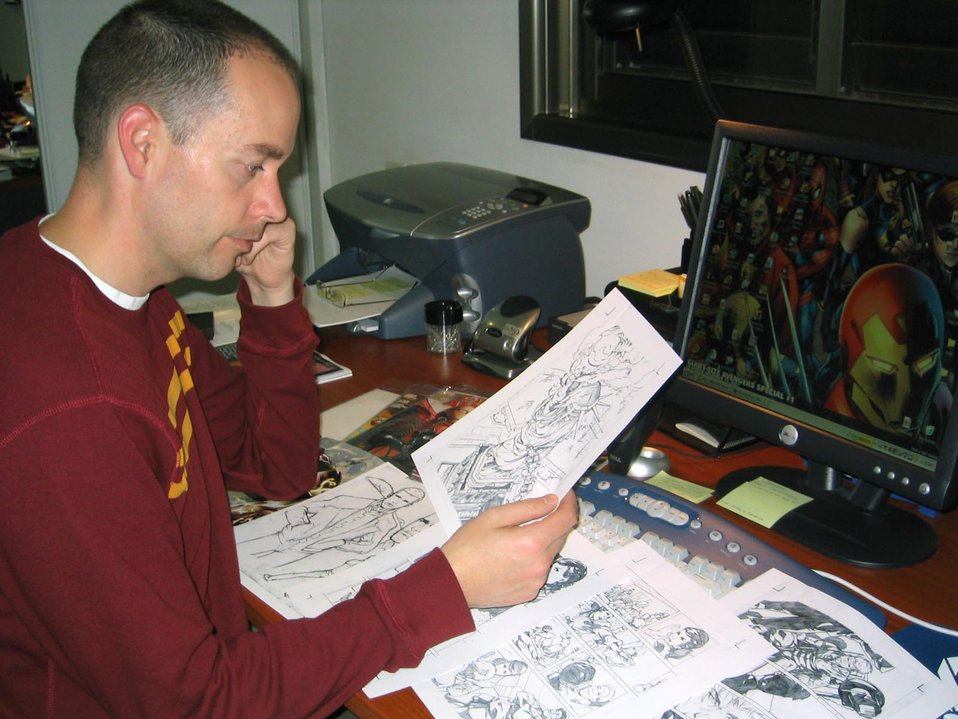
Major writes for comic book

Major Matt Yocum reviews artwork for Marvel Comics' 'Giant-Size Avengers Special #1,' which will feature a story he wrote. The major, the assistant air attache at the U.S. Embassy in Tel Aviv, Israel, fell in love with comics at age 10 and said he never dreamed he'd one day be writing stories about Spider-Man and other superheroes. The issue with Major Yocum's story will be released Dec. 26.